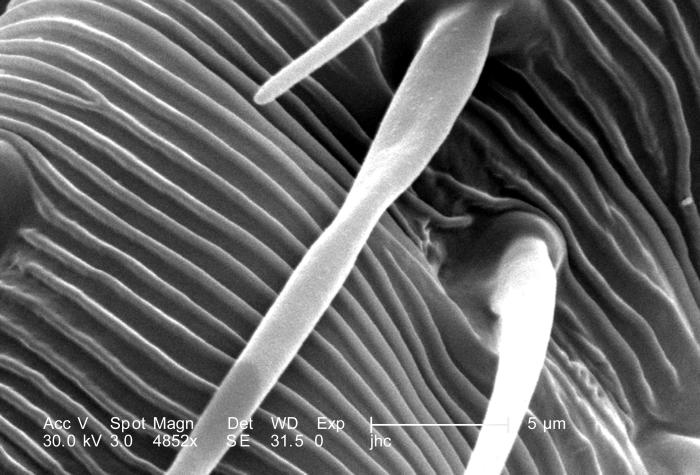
Under a magnification of 4852X, this scanning electron micrograph (SEM) revealed some of the morphologic features located upon the surface of one of the two antennae used by an unidentified 1/4"-sized black flying insect with a small red mark on its dorsum, in order to detect changes in the organism's environment such a wind speed and direction, chemical queues, i.e., pheromones, and variations in temperature. The antenna is composed of three main regions: scape, pedicle, and flagellum. The scape attaches the sensory organ to the head region, while the pedicle joins the distal, jointed flagellum to the scape.